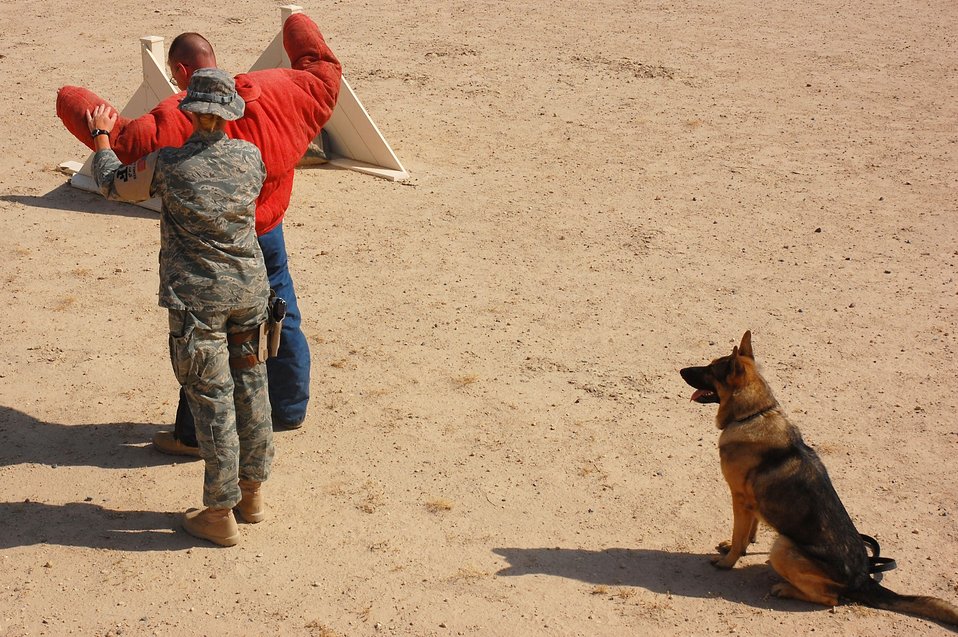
Working like a dog

Staff Sgt. Laura Felts performs a search of a decoy Sept. 19 at a deployed location in Southwest Asia. Sergeant Felts is a 386th Expeditionary Security Forces Squadron military working dog handler. Bert, a 386th ESFS military working dog, sits in an overwatch position, substituting for a human partner. Military working dogs are trained to respond to a hostile threat to either themselves or their partner, with or without a command.